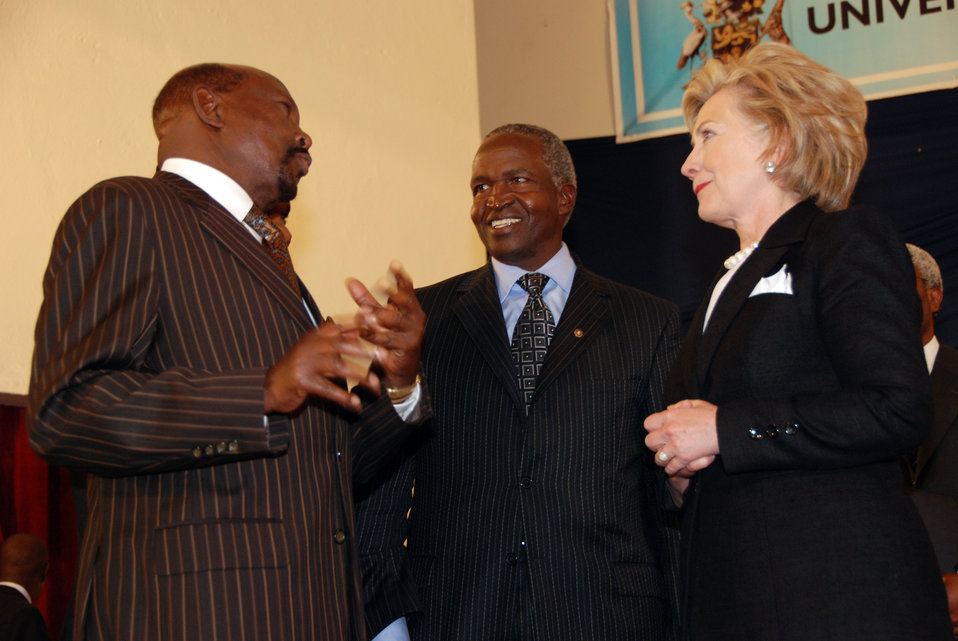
Secretary Clinton Visits Nairobi University

U.S. Secretary of State Hillary Rodham Clinton speaks with a group of men at the University of Nairobi, Kenya in Nairobi, Kenya August 6, 2009.